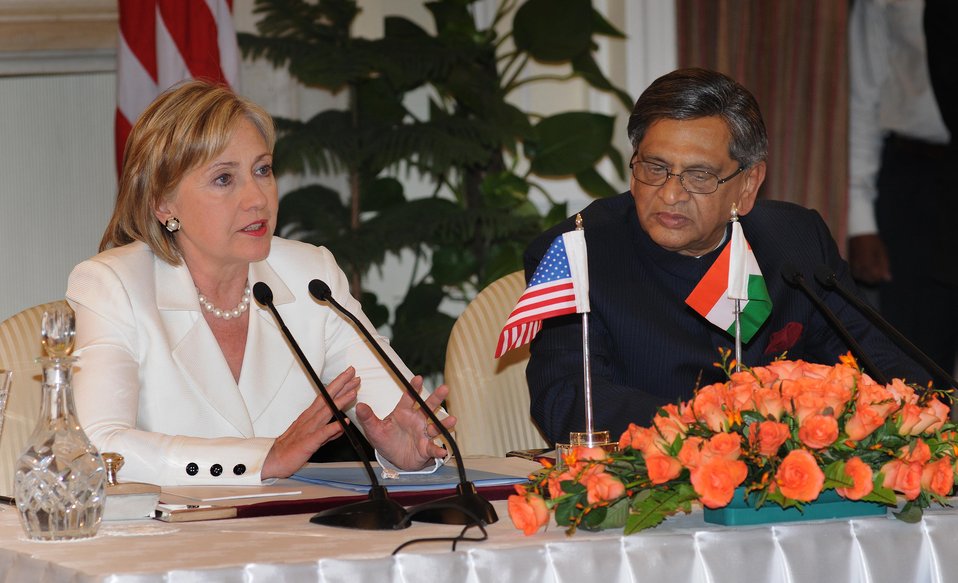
U.S., India Sign Bilateral Science and Technology Endowment Agreement

U.S. Secretary of State Hillary Rodham Clinton and Indian Minister of External Affairs S.M. Krishna speak to reporters following the signing of a U.S.-India bilateral science and technology endowment agreement in New Delhi, India July 20, 2009.